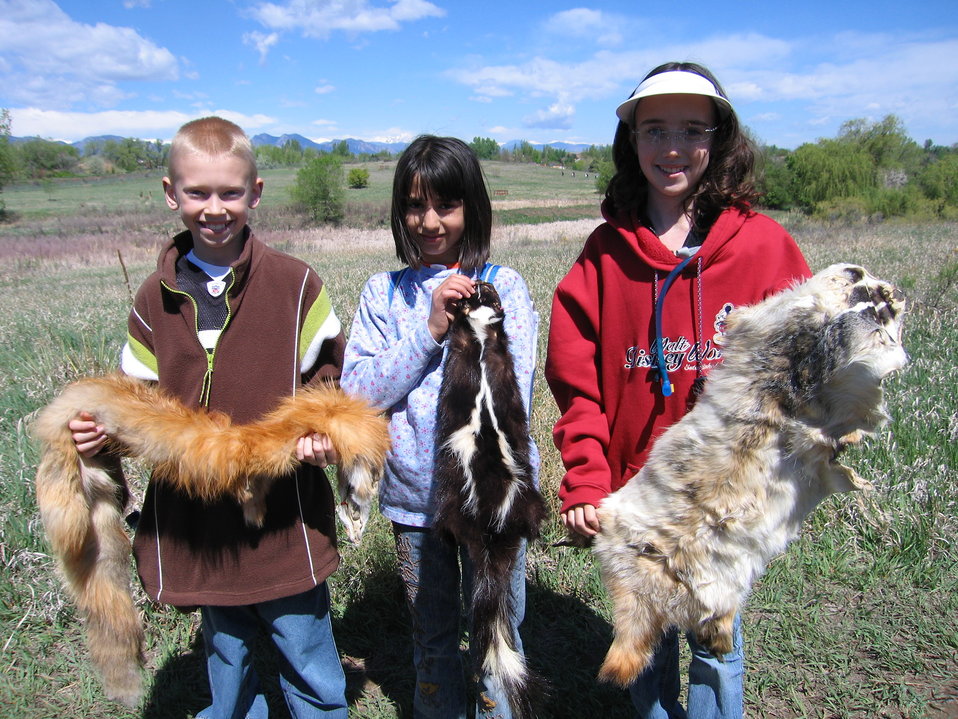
EE Program - Two Ponds